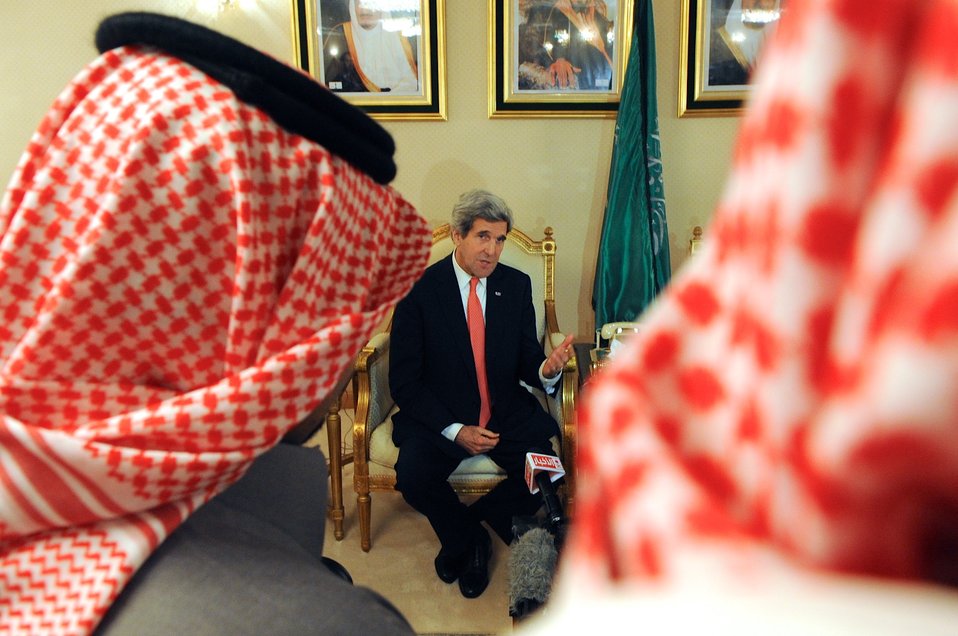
Secretary Kerry Speaks to Saudi, U.S. Media in Riyadh

U.S. Secretary of State John Kerry and Foreign Minister Crown Prince Saud al-Faisal of Saudi Arabia, not pictured, address Saudi and American reporters in Riyadh about their just-concluded meeting with King Abdullah on January 5, 2014.